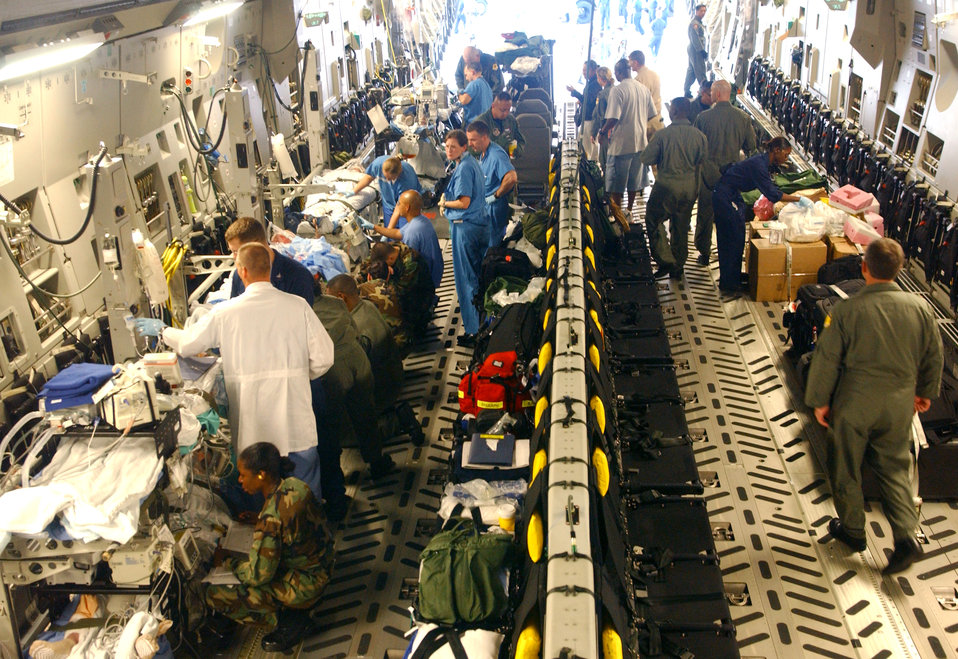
Andersen Airmen treat, transport injured Sailors

Members from the 36th Wing, 18th Wing and Guam civilian medical community stabilize six Sailors Dec. 2 at Andersen Air Force Base, Guam, before their onward flight to Hickam AFB, Hawaii. The Sailors were injured when a steam line ruptured in the engineering room of the USS Frank Cable in Guam.